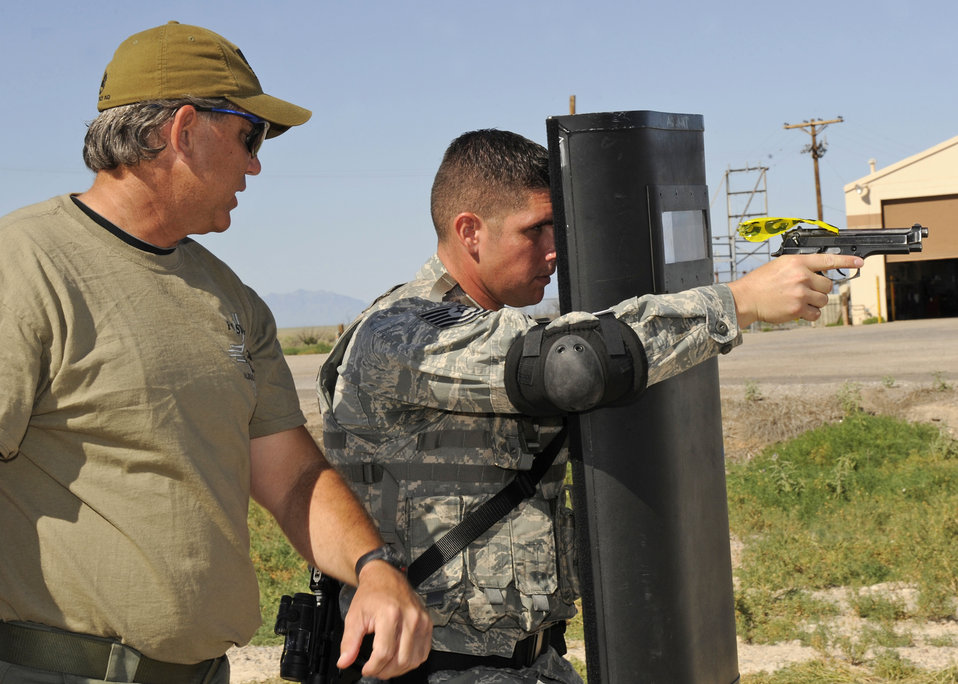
Holloman defenders train with FBI

Special Agent Rich Price assists Tech. Sgt. Thomas Henzl with basic ballistic shield work during training Aug. 6, 2010, Holloman Air Force Base, N.M. Agent Price is a training coordinator with the Federal Bureau of Investigation, Albuquerque division. Sergeant Henzl is assigned to the 49th Security Forces Squadron Military Working Dog Flight.